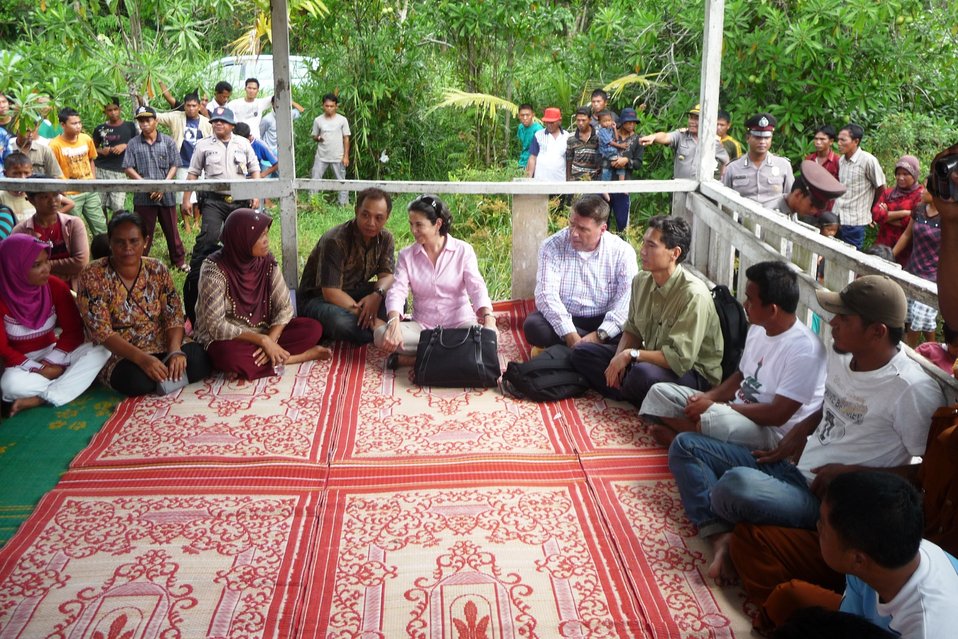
Under Secretary Otero Listens to Locals

Under Secretary for Democracy and Global Affairs Maria Otero listens to local inhabitants and NGO representatives in the Teluk Meranti Village, Indonesia, May 19, 2010.